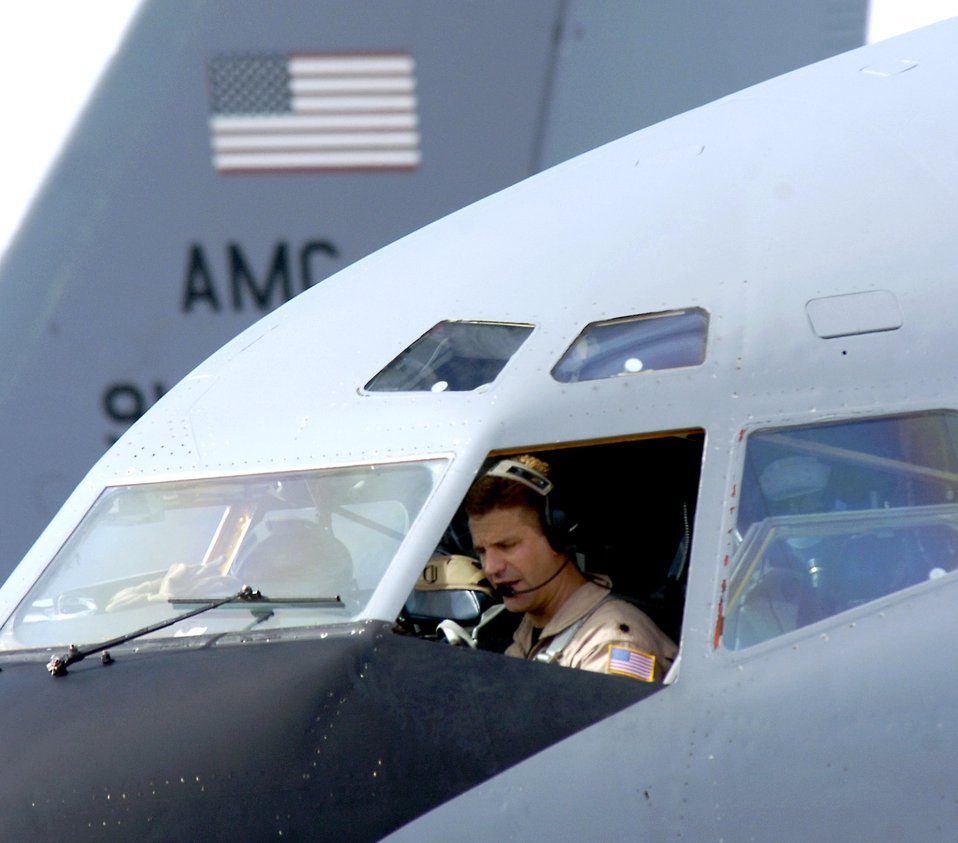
Supporting OEF

Lt. Col. David Cohen performs preflight checks on a KC-135 Stratotanker. The KC-135 later refueled a B-1 Lancer flying a close-air-support mission for Operation Enduring Freedom. Colonel Cohen is a pilot with the 28th Expeditionary Air Refueling Squadron.